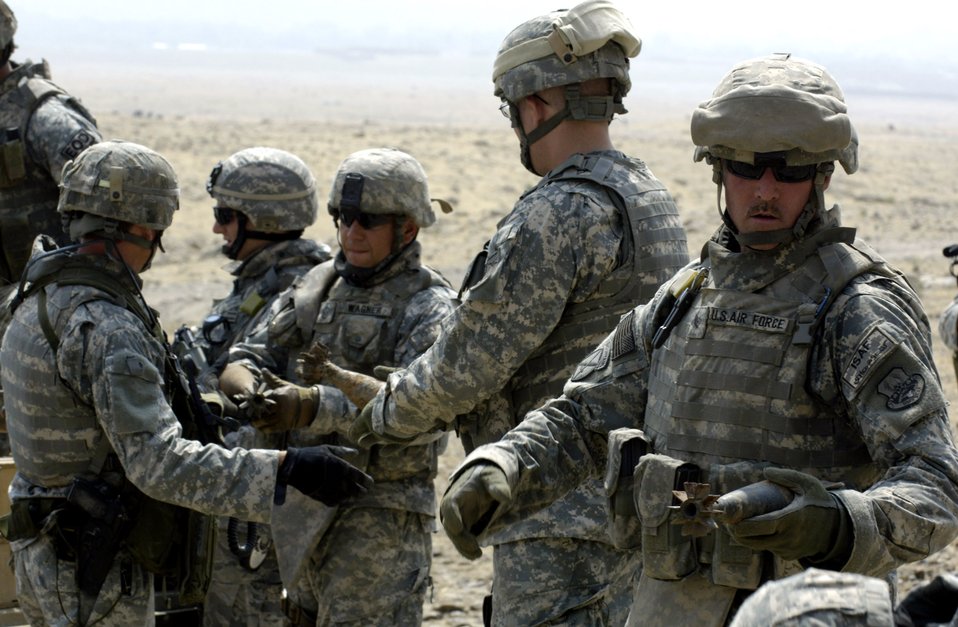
Small rewards program results in big explosion

Air Force explosive ordnance disposal specialists from Forward Operating Base Mehtar Lam, Afghanistan, ready ammunition for a controlled detonation Sept. 1. Nearly 900 pounds of small arms ammunition, rocket-propelled grenades and mortars were turned in by provincial citizens.